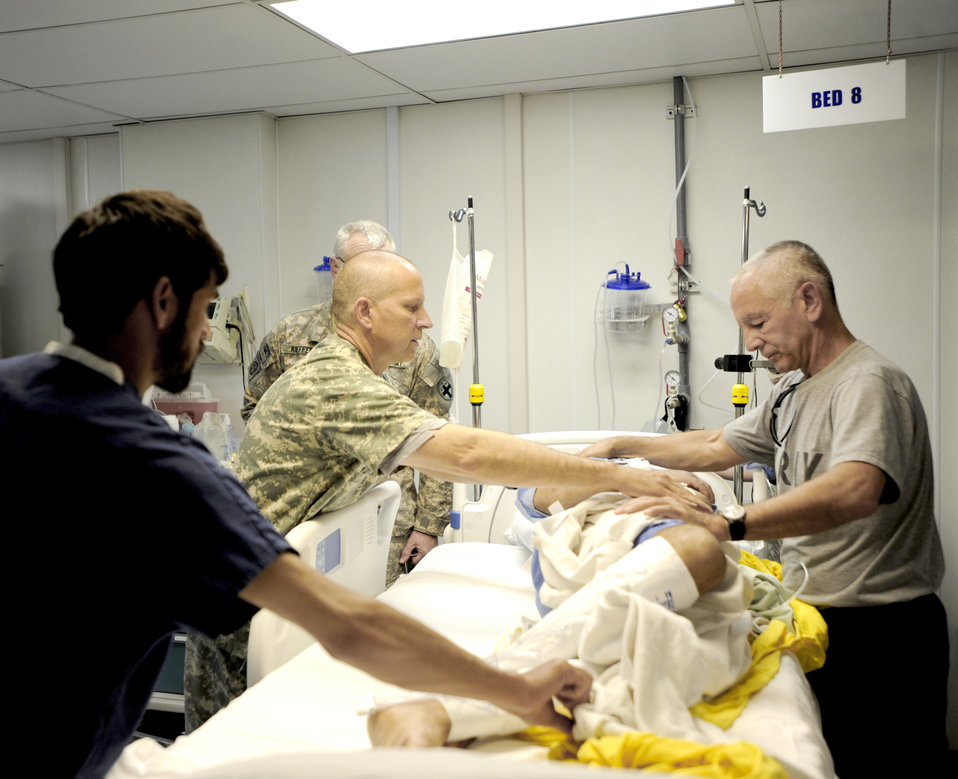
Joint hospital staff cares for warfighters, Afghans

Army Capt. Andrew Kontowicz (left) and Army Lt. Col. (Dr.) Davis Williams with the help of an Afghan nurse conduct an assessment of a patient medically evacuated from the Craig Joint Theater Hospital at Bagram Airfield May 12, 2010, to Forward Operating Base Salerno, Afghanistan.